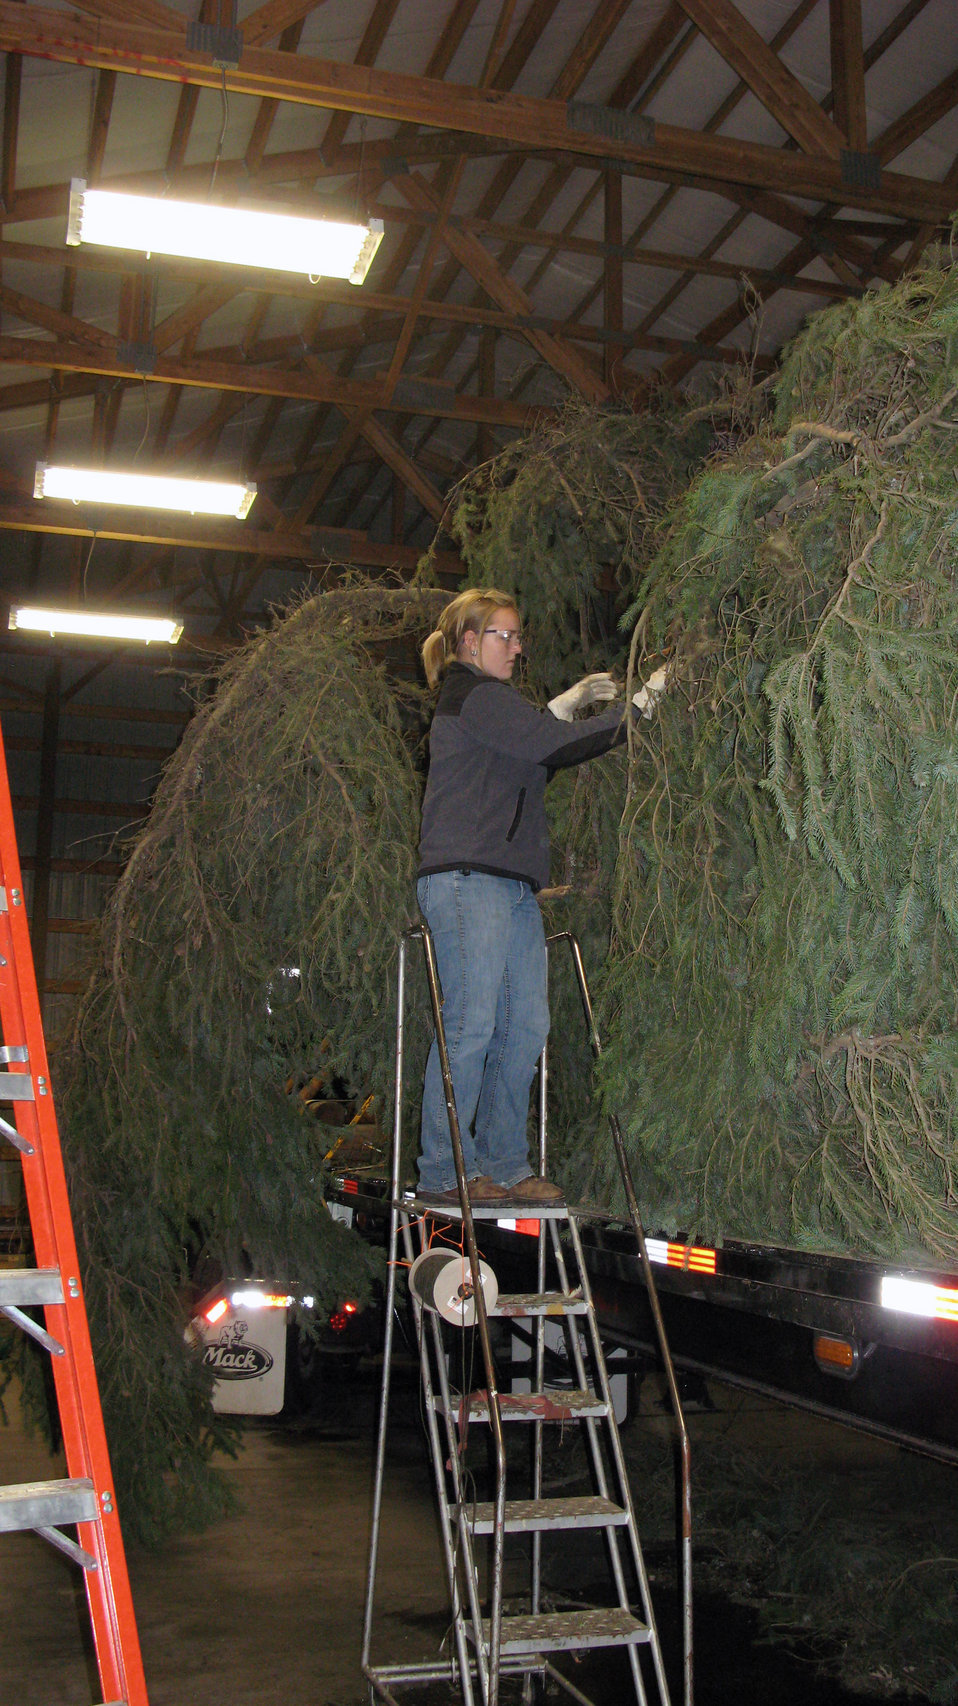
Colville National Forest personnel prepare the official 2013 Capitol Christmas Tree for transport on Nov. 3, 2013. The Capitol Christmas tree is an 88-foot tall Engelmann spruce that was harvested at Colville National Forest in Washington on Nov. 1, 2013.